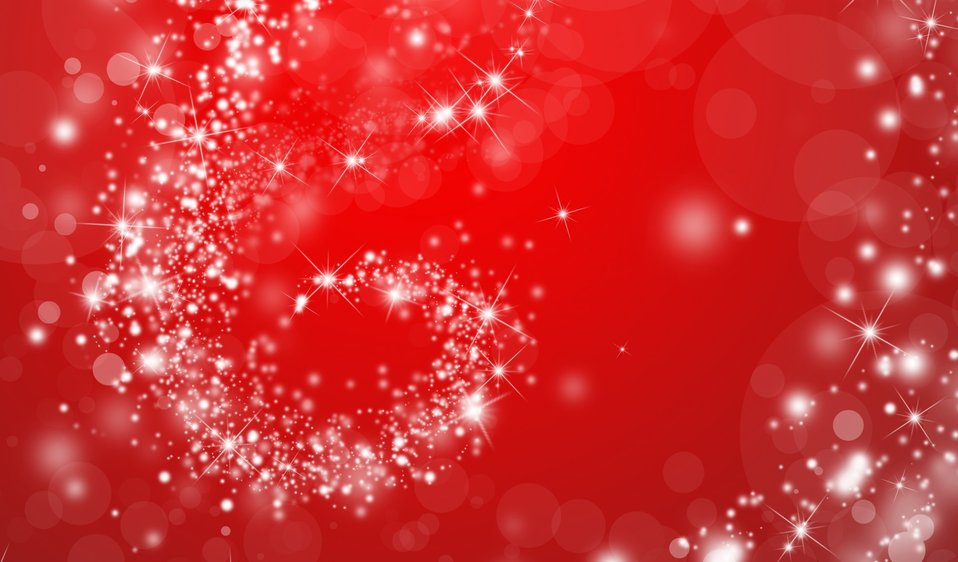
Red sparkly wallpaper swirl.